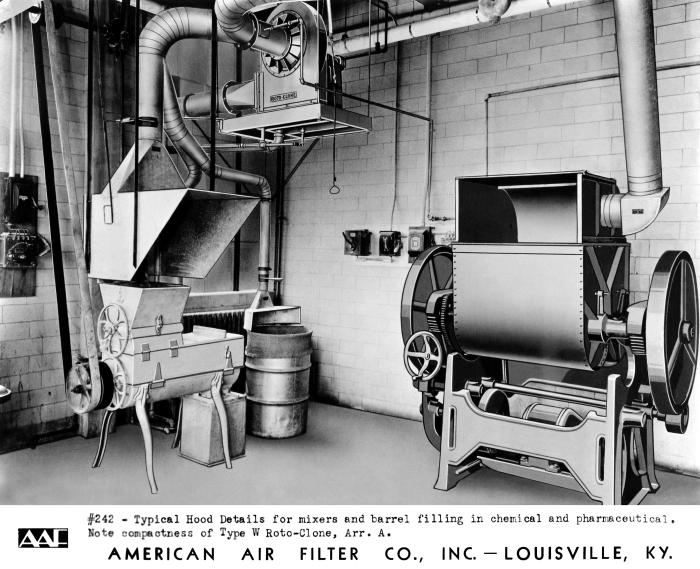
This historical image was provided by the Center for Disease Control's (CDC), National Institute for Occupational Safety and Health (NIOSH). This composite, combining a photograph and illustration, depicted a Roto-Clone� exhaust ventilation hood, which was located inside the American Air Filter Co. in Louisville, Kentucky. The image revealed the details of a 'typical' hood and mixer configuration that was used when 'barrel-filling' with a chemical or pharmaceutical mixture.